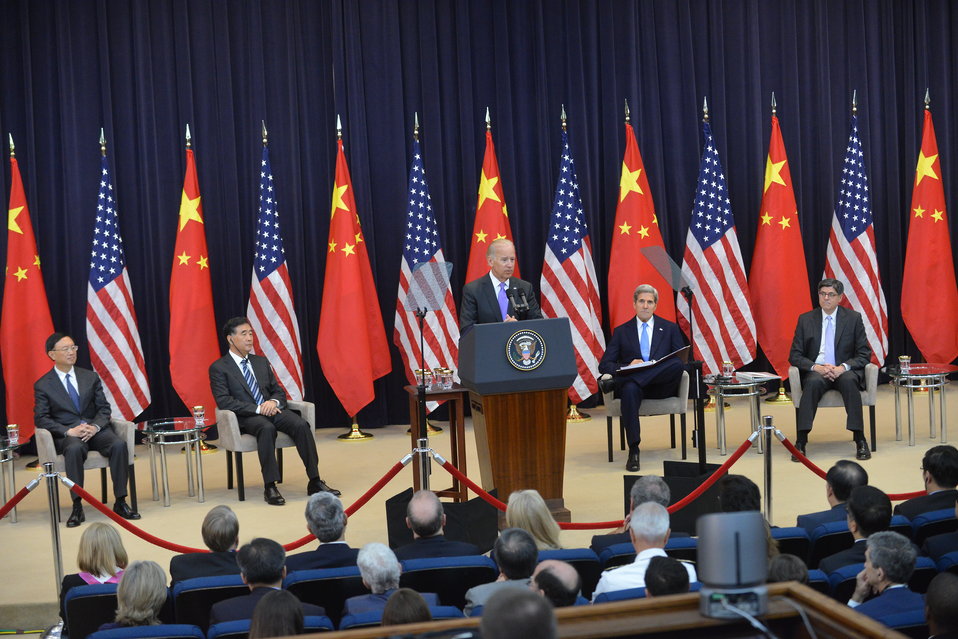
Vice President Biden Delivers Remarks at the Joint Opening Session

Vice President Joseph Biden delivers remarks at the U.S.-China Strategic and Economic Dialogue Joint Opening Session in the Dean Acheson Auditorium at the U.S. Department of State in Washington, D.C., on July 10, 2013.